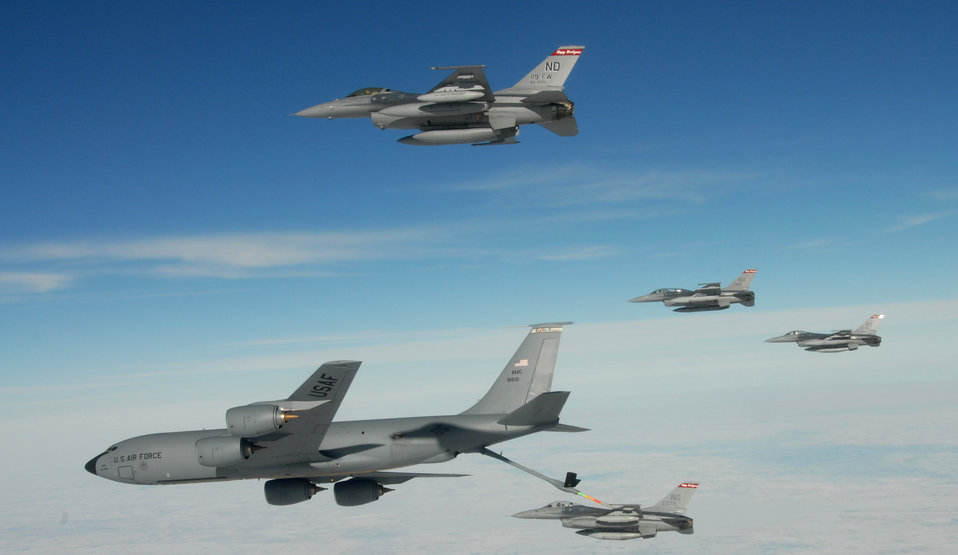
Fill er' up

F-16 Fighting Falcons from the North Dakota Air National Guard's 119th Fighter Wing get refueled by a 319th Air Refueling Wing KC-135 Stratotanker Jan. 16 over North Dakota.